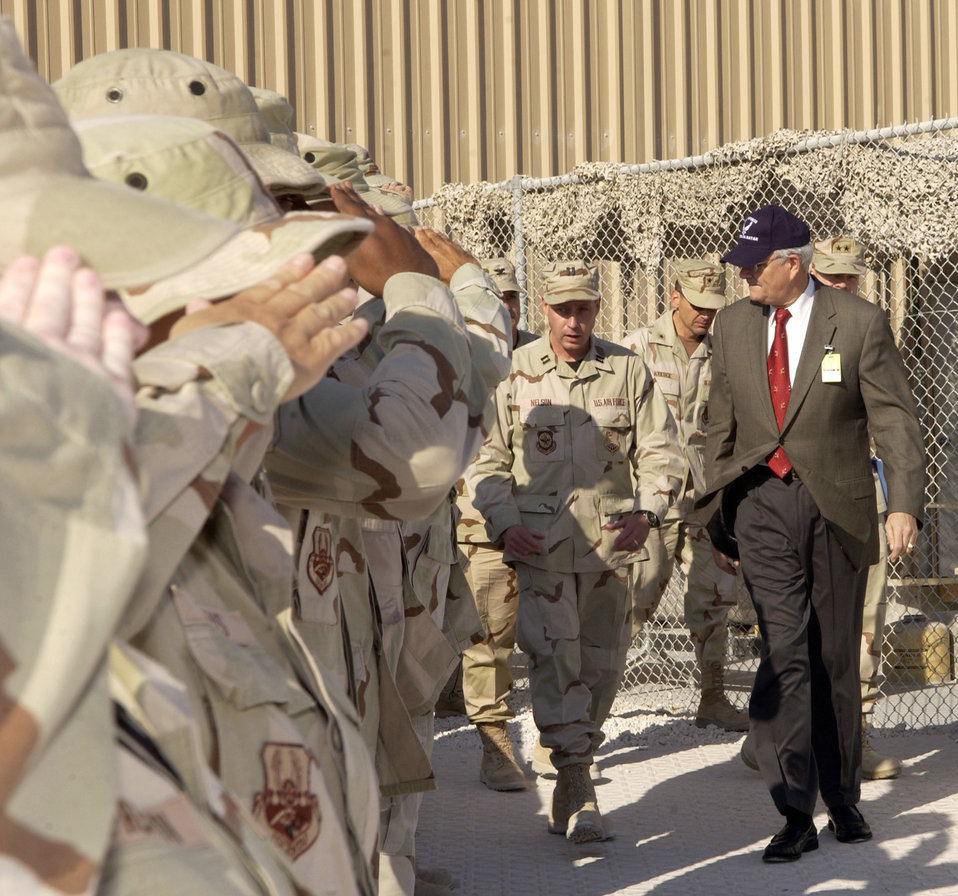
Desert duty

SOUTHWEST ASIA (AFPN) -- Secretary of the Air Force Michael W. Wynne meets a group Airmen with the 379th Air Expeditionary Wing. This is Secretary Wynne's first tour to the region.